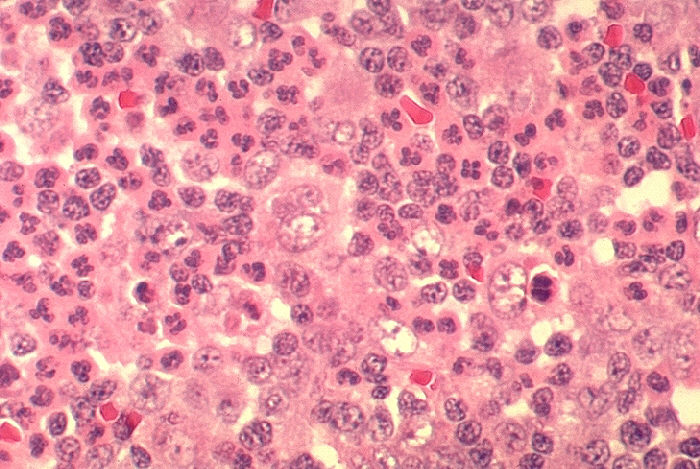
Histopathology of lymphadenopathy due to infection by HIV-1. Medullary sinus.